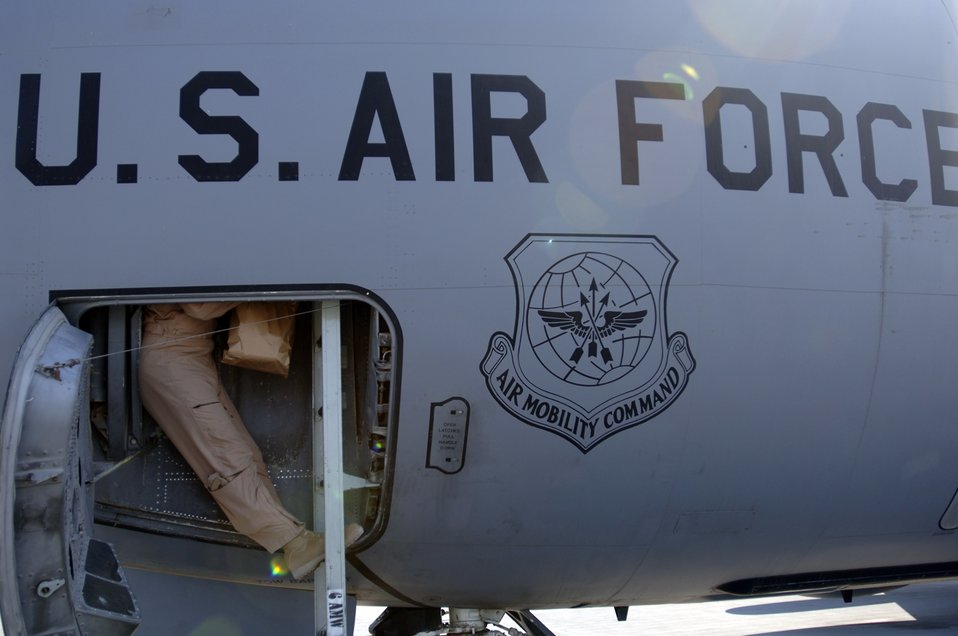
KC-135s keep 'em flying

Capt. James Post helps load aircrew bags in a KC-135 Stratotanker in preparation for a refueling mission over Iraq in support of Operation Iraqi Freedom. On Jan. 29, U.S., French and Royal Air Force tankers flew 25 sorties and off-loaded almost 1.6 million pounds of fuel in support of OIF and Operation Enduring Freedom.